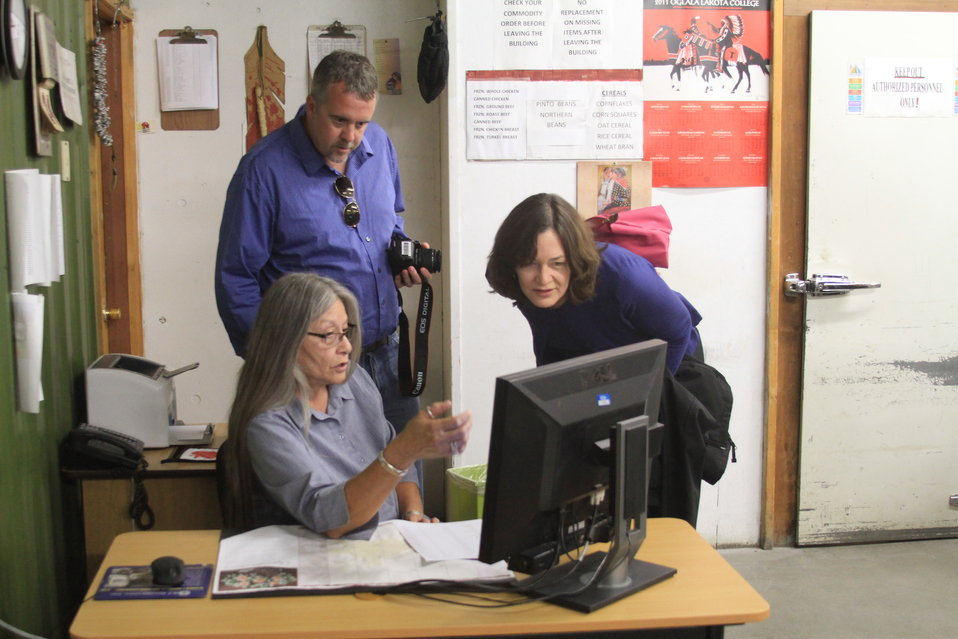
Left to right; Jackie Dunn, Certification Specialist Specialist for the Food Distribution program on the Cheyenne River Reservation demonstrates the computer program that determines a families eligibility for the program to Devin Koontz, Public Affairs Director at U.S. Department of Agriculture (USDA), Food and Nutrition Service (FNS) and Leslie Wheelock, USDA, Director of the Office of Tribal Relations on the Cheyenne River Indian Reservation, SD, on Tuesday, Sept. 24, 2013.